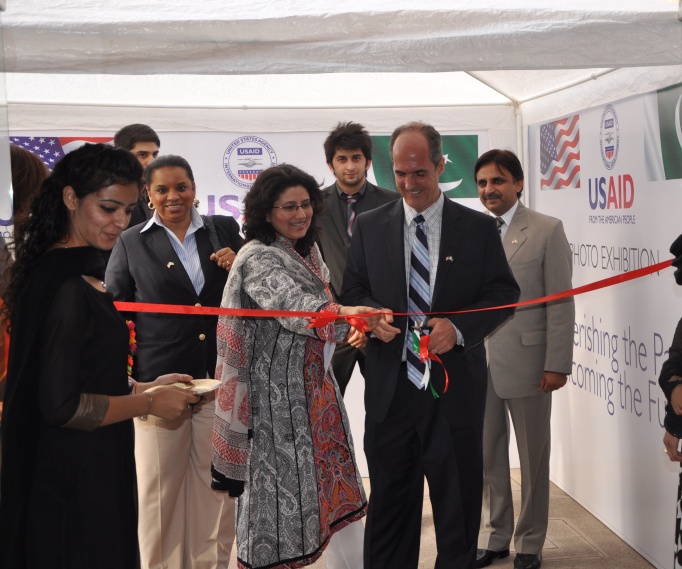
Provinicial Mission Director Punjab Ted Gehr arrives for the inauguration